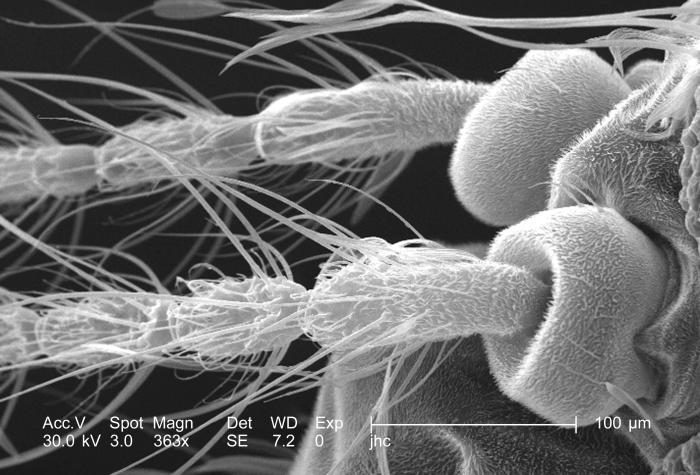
At a magnification of 363x, this scanning electron micrograph (SEM) revealed some of the morphologic features of an Anopheles dirus mosquito's antennae. The antennae are composed of three basic segments: the proximal 1st segment known as the "pedicel", the middle segment, or "scape", and the third multi-segmented region known as the flagellum.Covered with sensorial "hairs", which aren't really hairs at all, but exoskeletal chitinous extensions, known as "setae", they provide feedback to the mosquito as to chemical, thermal, and tactile changes in its environment.